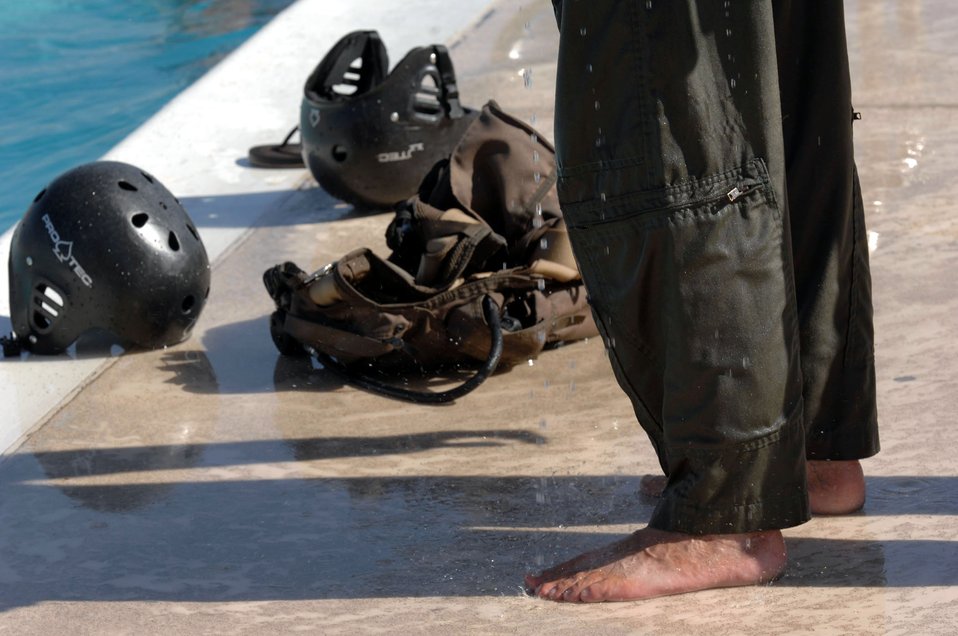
Practicing to be safe in the water

A Nevada Army National Guard aircrew member waits his turn to re-enter the pool for training on a helicopter underwater dunker device during his annual water survival training. The training is conducted by survival, evasion, resistance and escape, or SERE, instructors at Nellis Air Force Base, Nev.